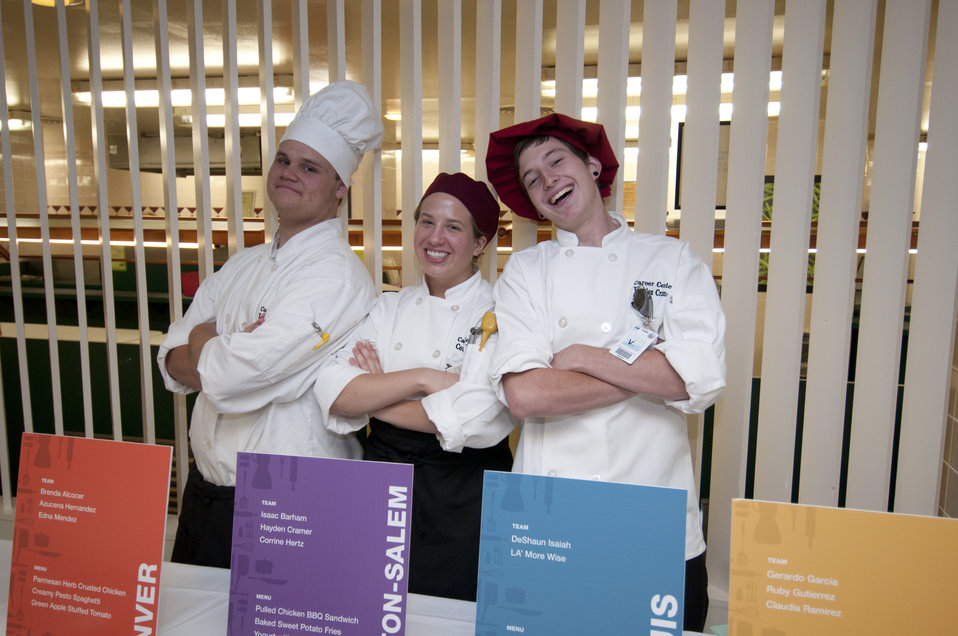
The Winston-Salem student chef team of (l-r) Isaac Barham, Corinne Hertz, and Hayden Cramer express their pride and relief after presenting their meal to the judges during the Cooking Up Change, National Healthy Cooking Competition at the USDA in Washington, DC, on Monday, May 23, 2011.